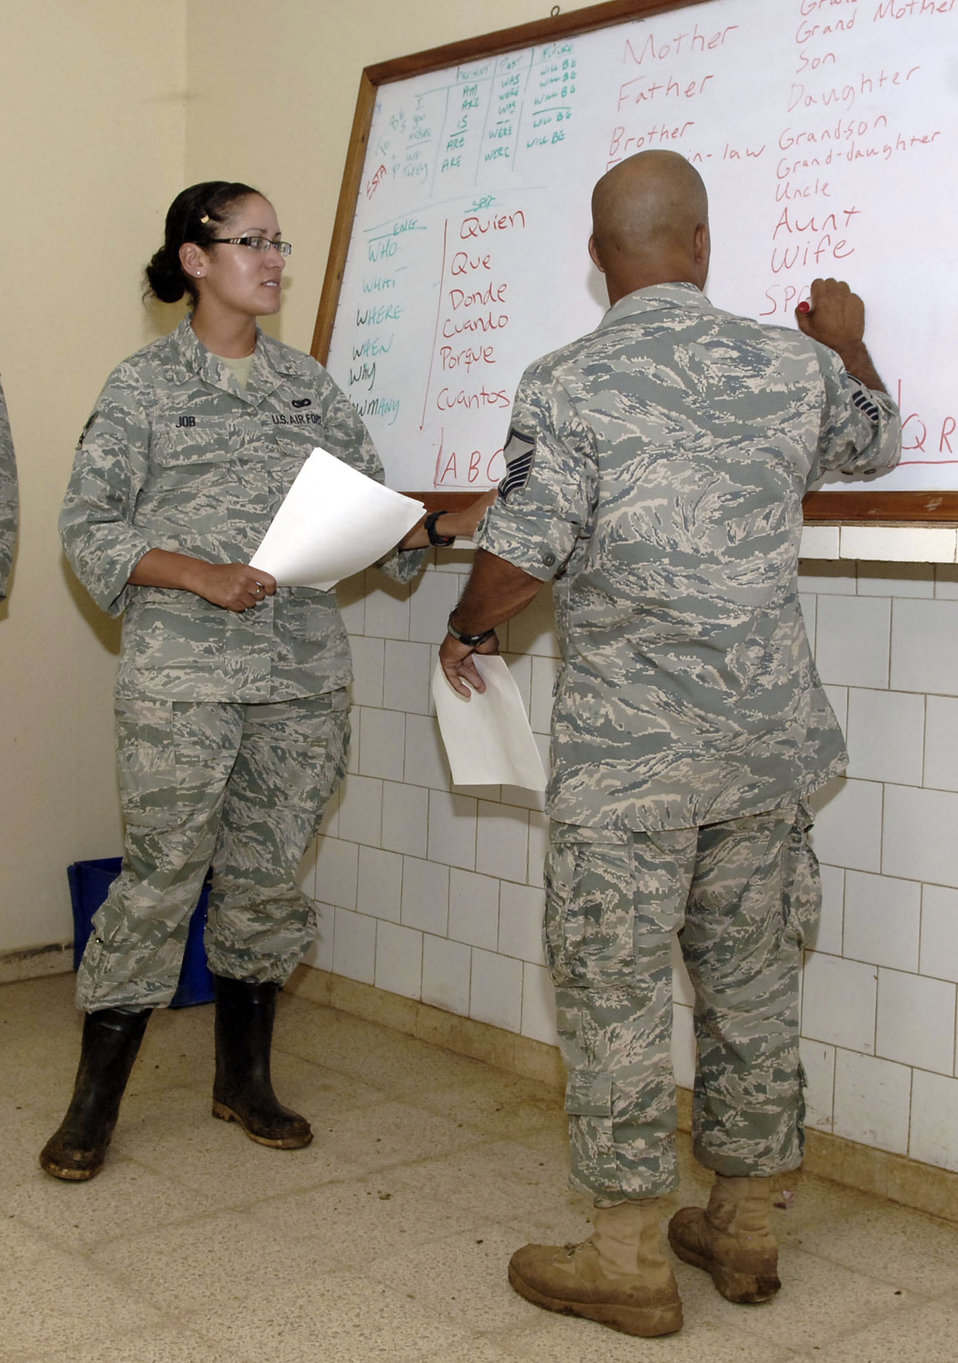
Security forces Airmen teach English to Panamanian hosts

Senior Airman Sheryl Job (left) and Master Sgt. Noland Rivera conduct an English class for members of the Panamanian Frontier Police July 3, 2010, in Meteti, Panama. Both Airmen are deployed in support of New Horizons Panama 2010, a U.S. Southern Command sponsored humanitarian mission designed to provide medical care and quality-of-life improvement projects for the people of Panama. Sergeant Rivera and Airman Job are assigned to 820th Expeditionary RED HORSE Squadron security forces.